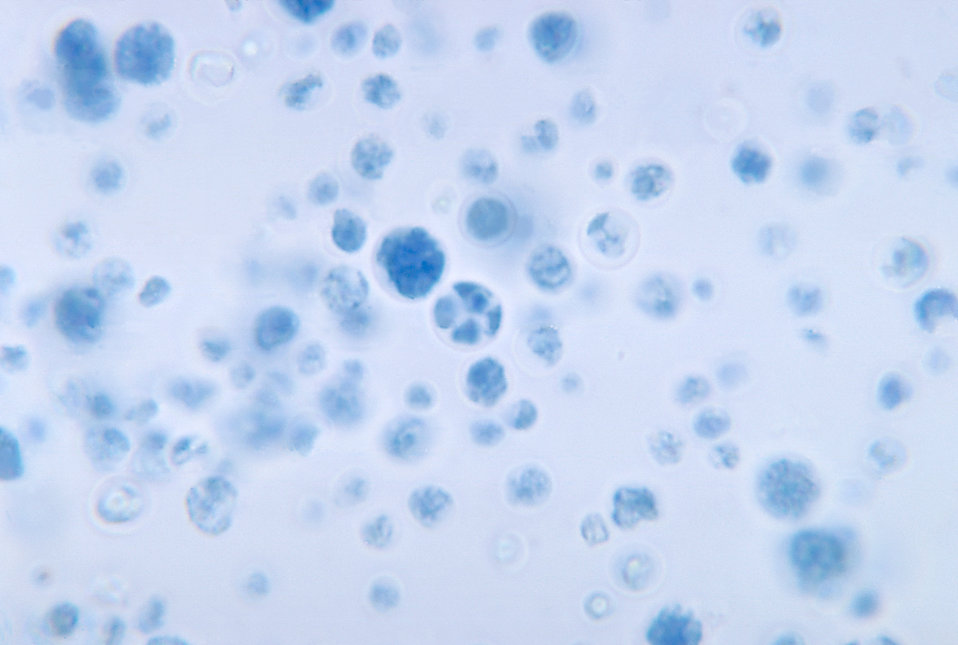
This photomicrograph confirms the presence of Prototheca stagnora, an achlorophyllic algae.